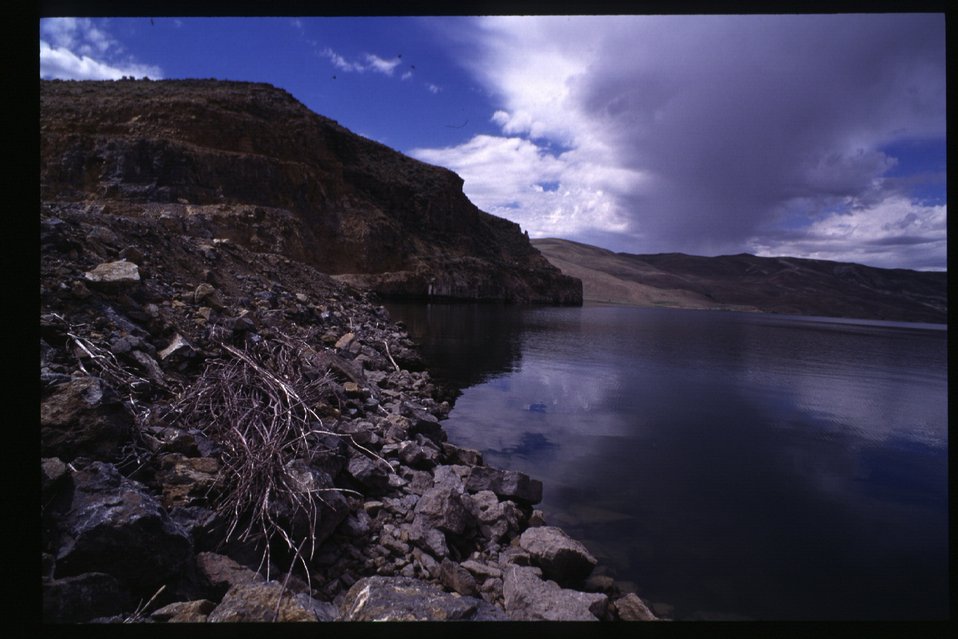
Scenic at Mackay Reservoir Challis Field Office UCSC Upper Columbia Salmon Clearwater District